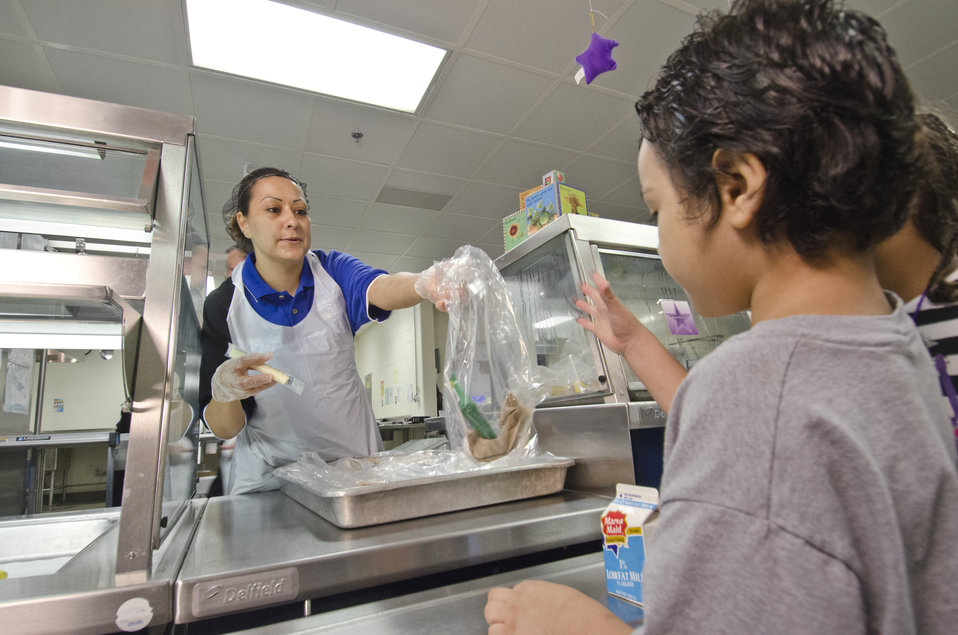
School lunch staff and students enjoy the new school lunch menu created to meet the new standards at the Yorkshire Elementary School in Manassas, VA on Friday, Sept. 7, 2012.